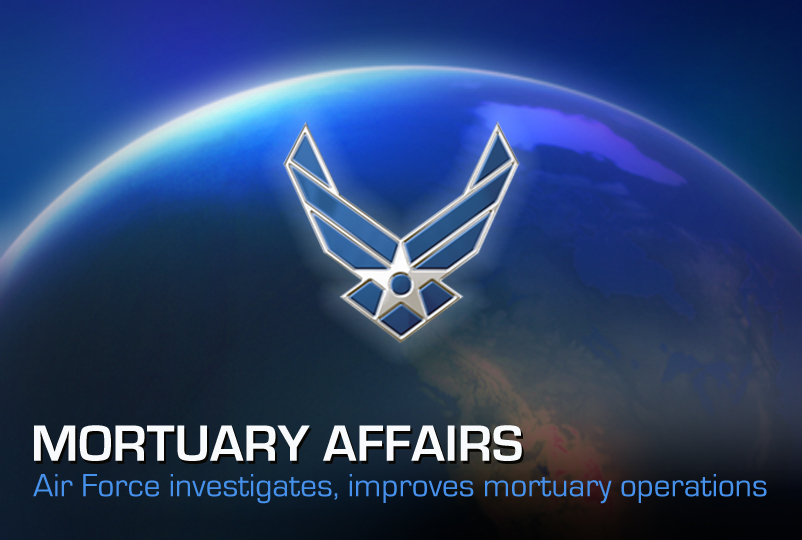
Mortuary Affairs